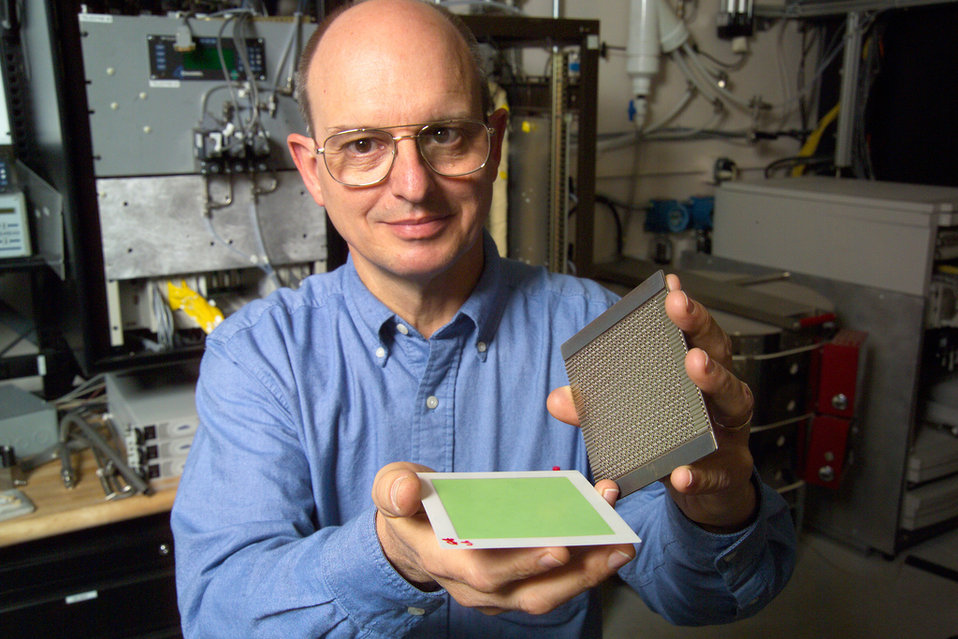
Stephen Herring holding fuel cell stack components at Idaho National Laboratory.